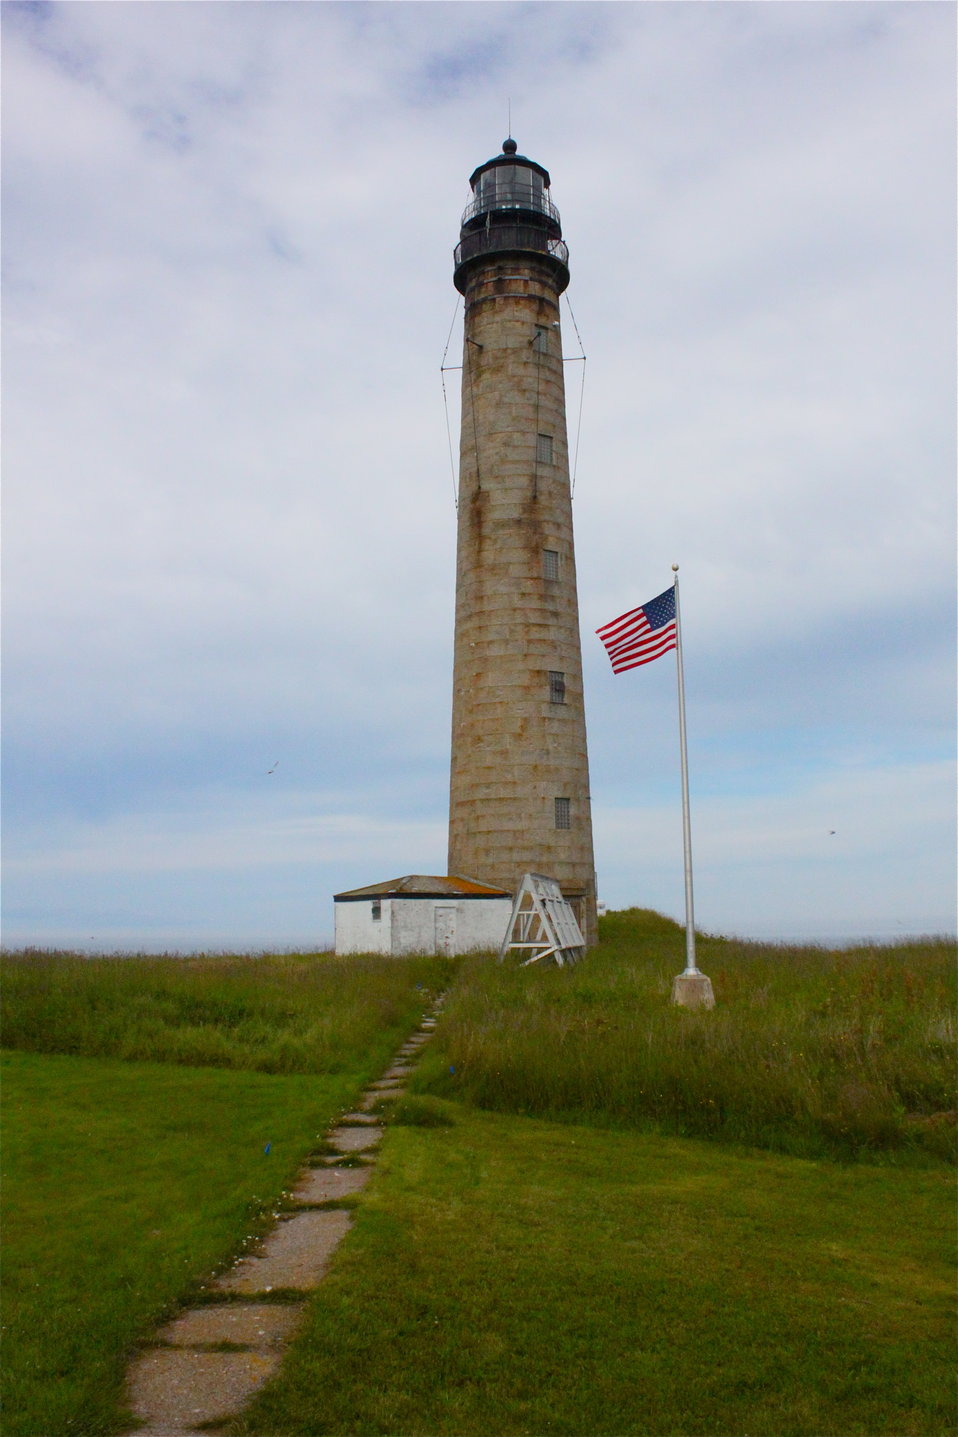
Petit Manan Island Lighthouse